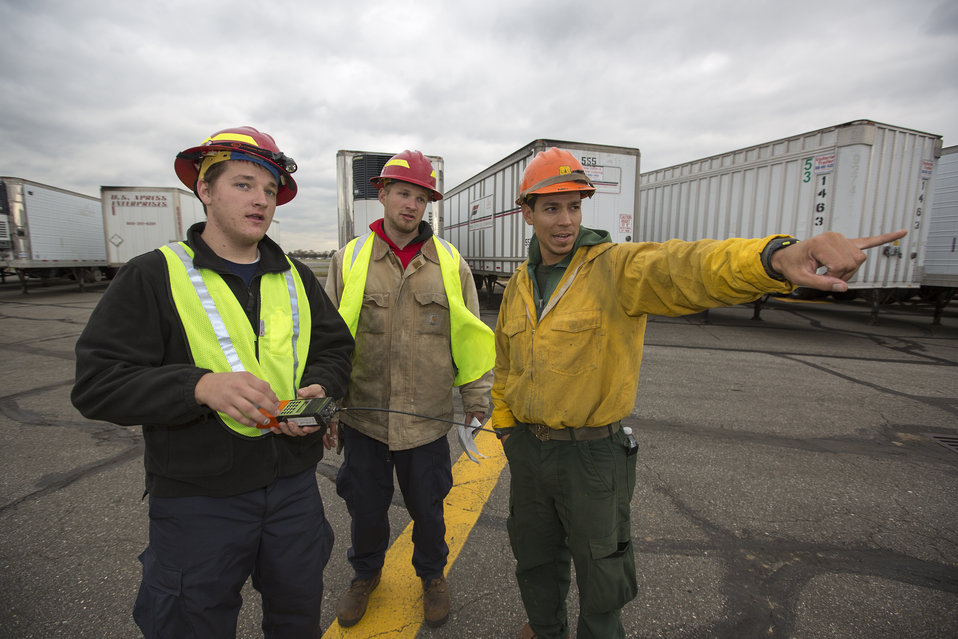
U.S. Forest Service (USFS) Hot Shots plan for bulk receiving and distribution of supplies at the Republic Airport in Farmingdale, NY on Thursday, Nov 1, 2012. The USFS is working with the Federal Emergency Management Agency (FEMA) to distribute supplies of water, Meals Ready to Eat (MRE), cots and generators to victims affected by Hurricane Sandy.